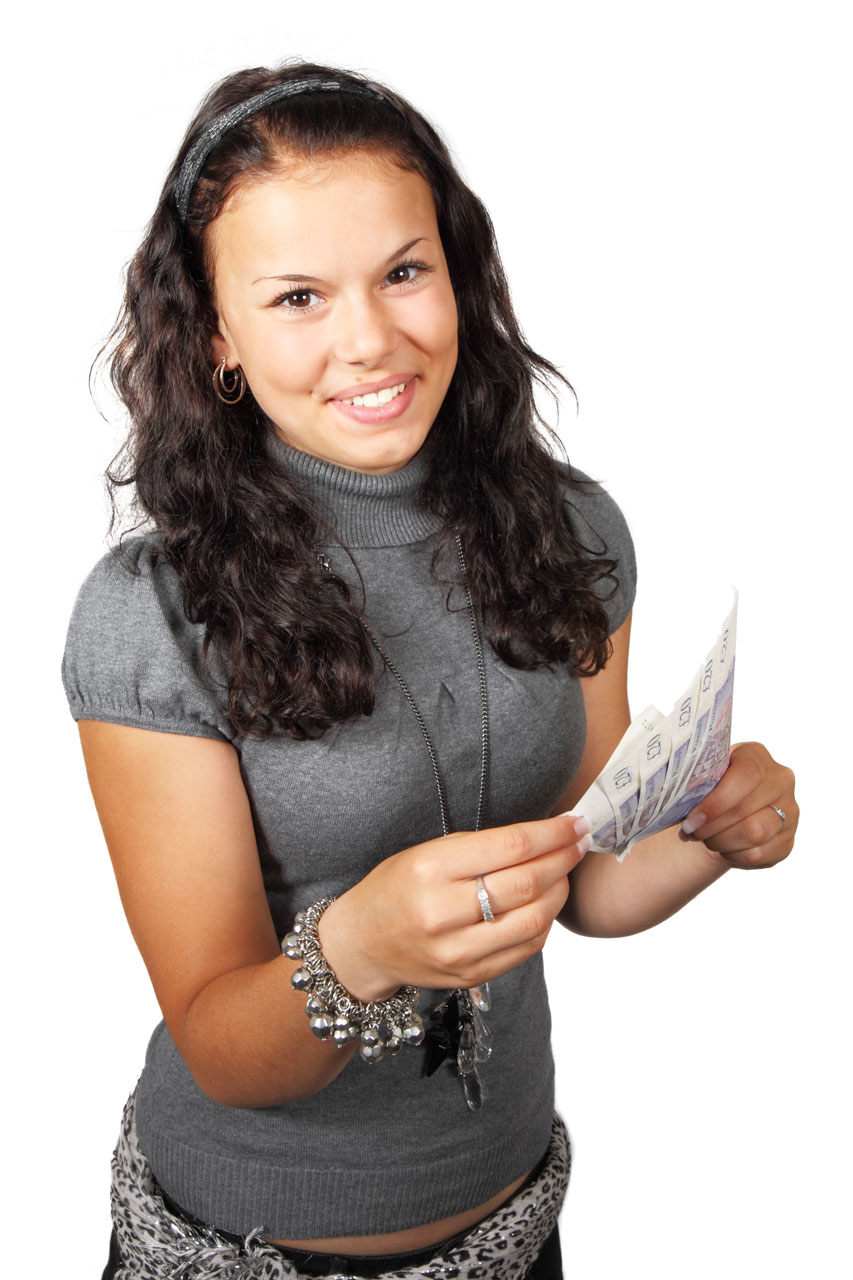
Counting cash

Young woman counting cash.